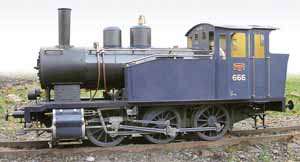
A 1:8 live steam scale model of a VR Class Vr1 type 0-6-0 tank locomotive from 1914. Suomi: Vr1-höyryveturista 1:8-mittakaavaan tehty pienoismalli